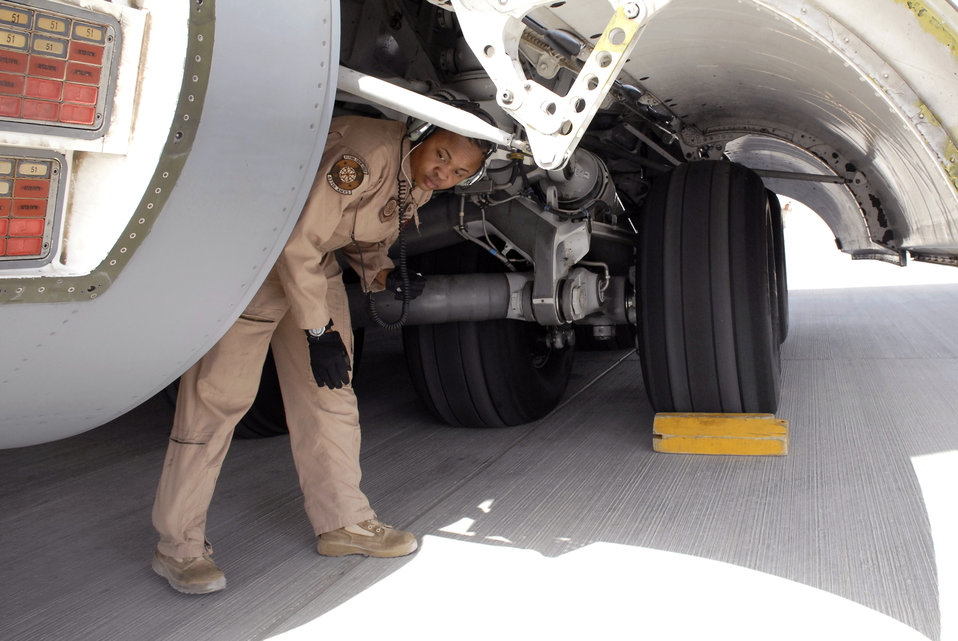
Preflight check

Staff Sgt. Krysteena Scales performs preflight checks before departing on a mission in a C-17 Globemaster III March 19 at an air base in Southwest Asia. Sergeant Scales is a 816th Expeditionary Airlift Squadron flying crew chief and was part of an all-female flight crew.